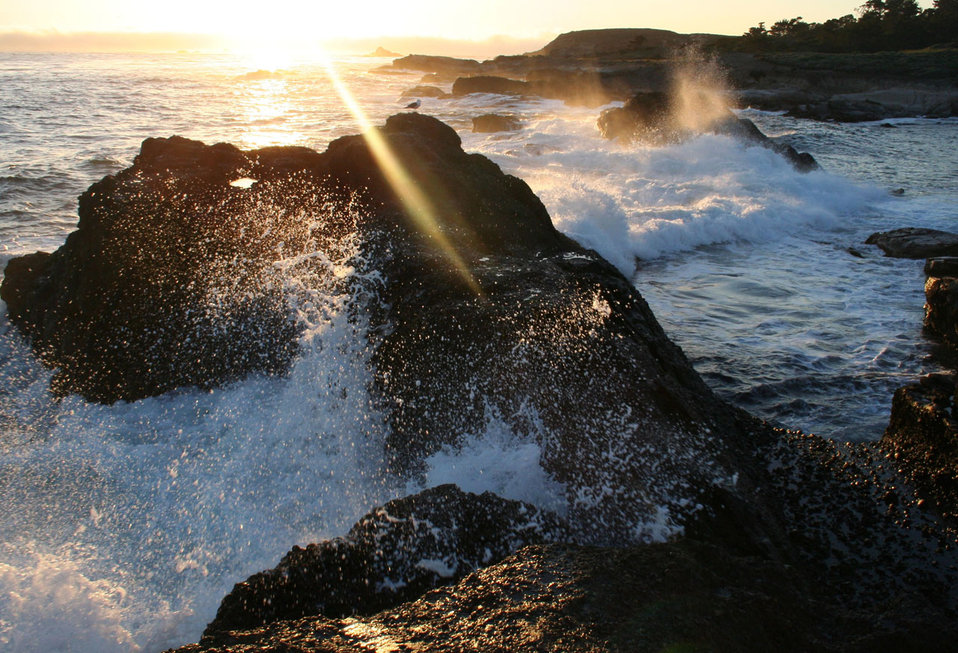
Carmel splash

Sun flare with splashing waves at sunset.